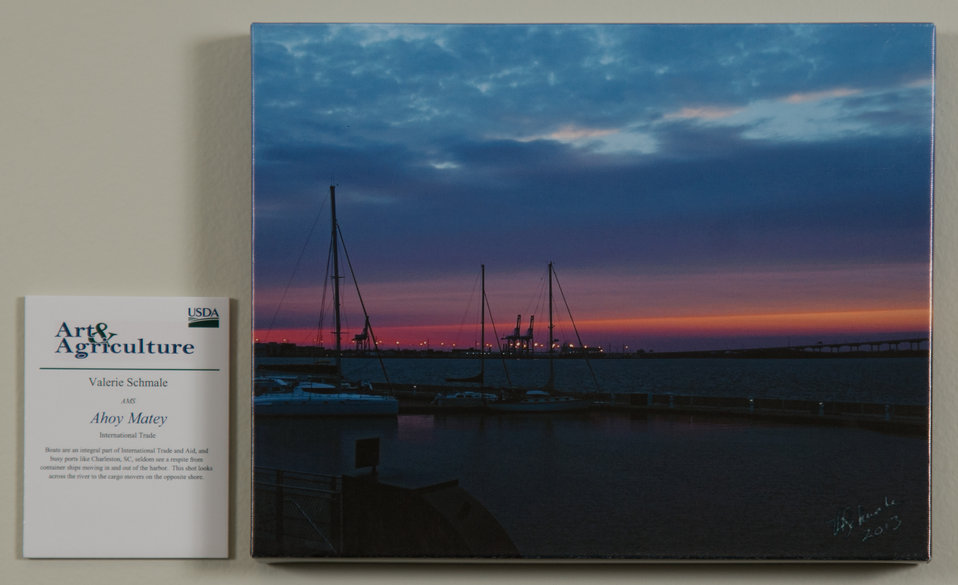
Online Viewer's Choice entries of the 2013 Art & Agriculture, Tuesday, July 9, 2013, in the South Building, Washington, D.C. Themes were expressed by employees from across the department and the contest was open to full-time and part-time USDA employees. Winning artwork will be displayed till the end of the year. U.S. Artistic expression is a creative outlet that is vital for an individual to grow and develop.